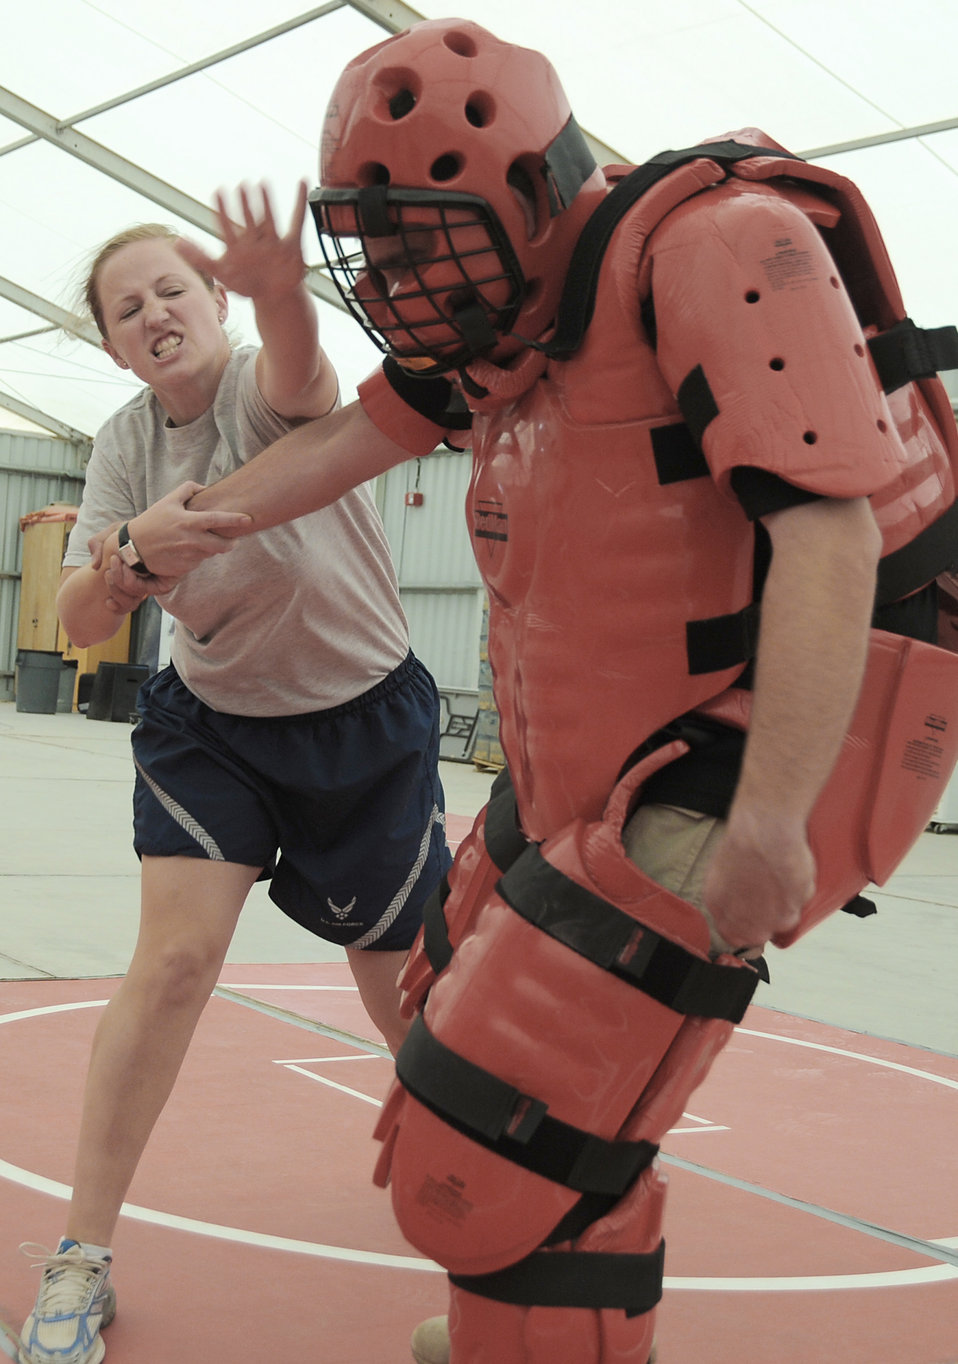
Getting defensive

Capt. Jennifer Pearson gives a blow to the head of Rick Baldwin, a contractor posing as the